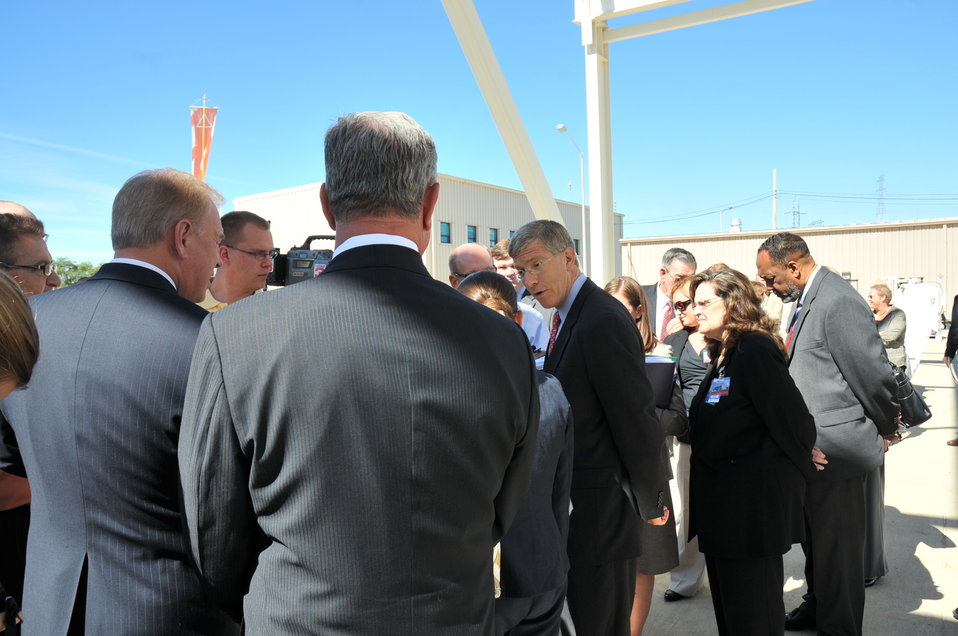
Deputy Secretary Poneman participates in a media availability, along with Ohio Governor Ted Strickland, Congresswoman Jean Schmidt and Congressman Charlie Wilson, as part of a ceremony on September 9 to recognize the start-up of hot functional testing operations at the Depleted Uranium Hexafluoride Conversion Plant in Piketon, Ohio.